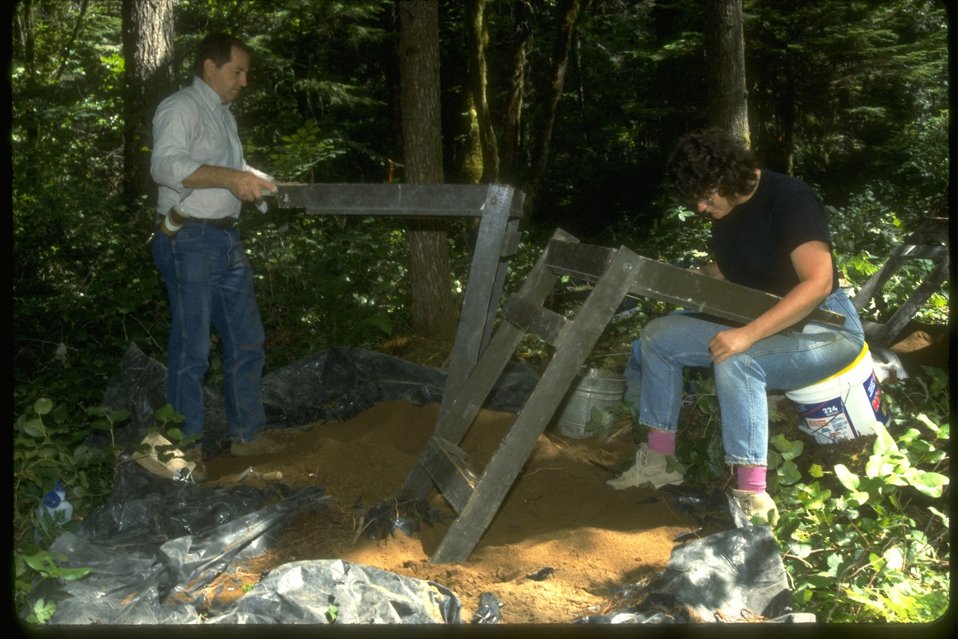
Archaeological workers on a dig.